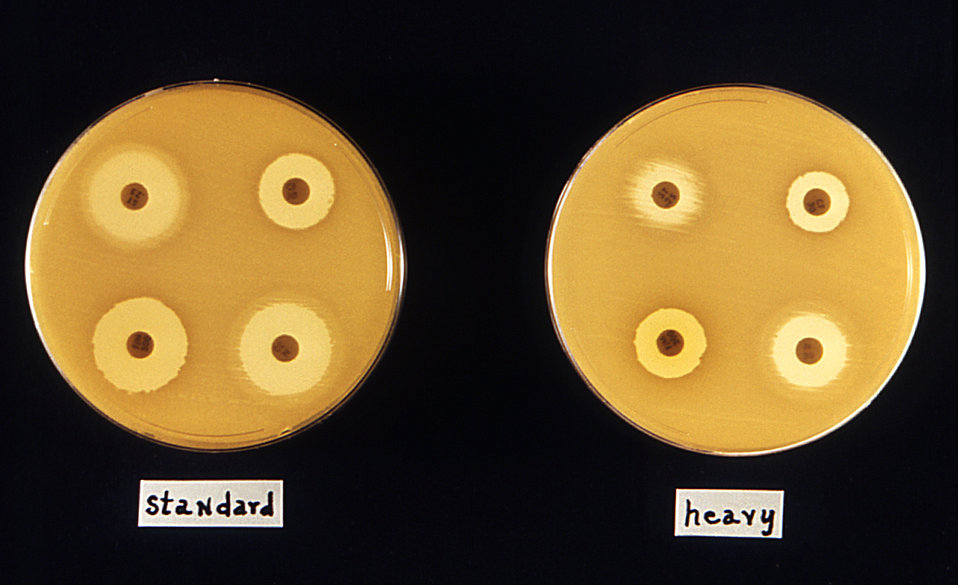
This 1972 image depicted two Mueller-Hinton agar culture plates that had been used in an antibiotic susceptibility test (AST). Known as the Kirby-Bauer method, each of the small labeled discs, or wafers, contained an antibiotic cocktail. The light halos surrounding each disc, also known as 'reaction zones', represented regions in which the bacteria on the agar's surface did not thrive, due to their sensitivity to the antibiotic that had been soaked into these respective discs.